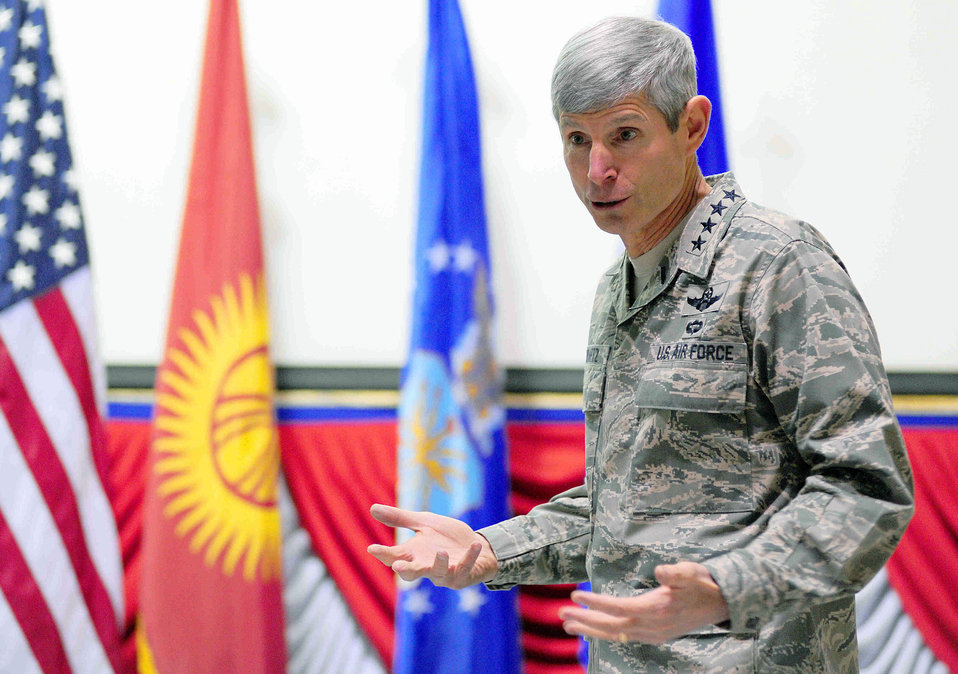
Air Force Chief of Staff Gen. Norton Schwartz speaks to Airmen Nov. 27, 2009, at the Transit Center at Manas, Kyrgyzstan.